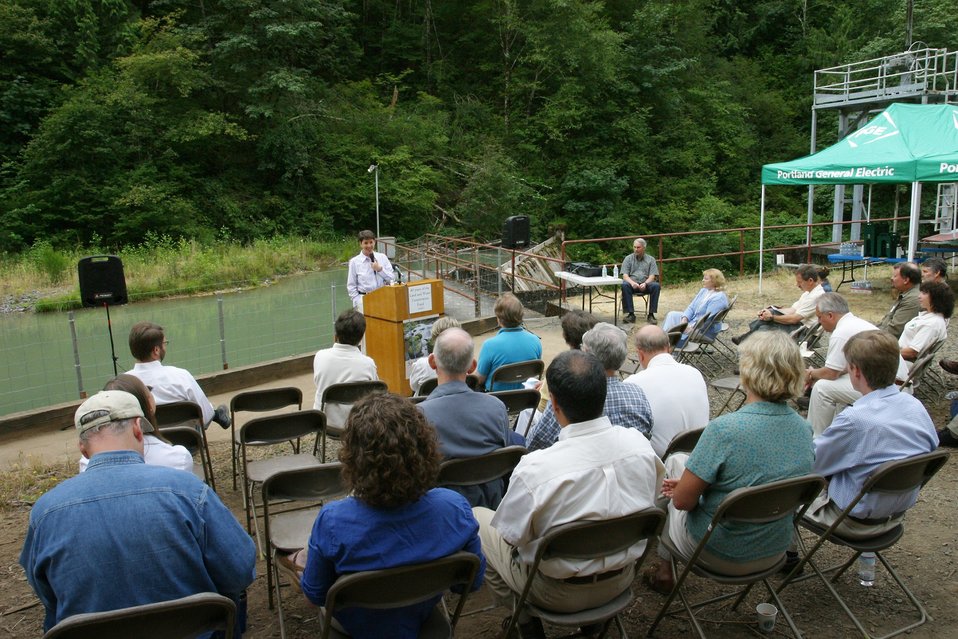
Sue Doroff, Vice President Western Rivers Conservancy, speaks during the Four C's Award at Little Sandy Dam.